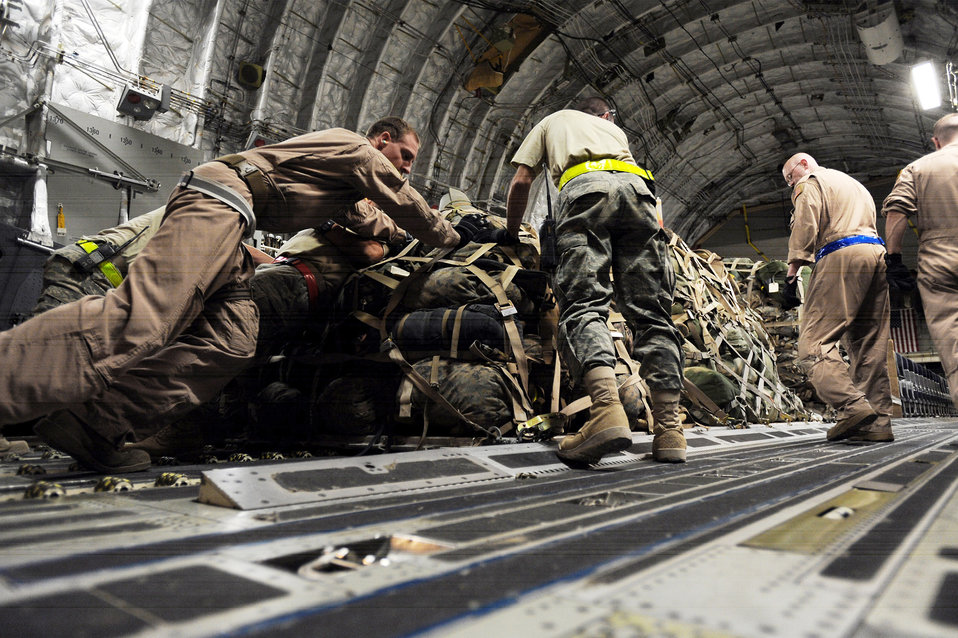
Airmen moving the mission in Afghanistan

Aerial porters assigned to the 451st Expeditionary Logistics Readiness Squadron Det. 1 and C-17 Globemaster III loadmasters assigned to the 816th Expeditionary Airlift Squadron load pallets of luggage that belong to 157 Marines boarding the aircraft April 15, 2010, at Camp Bastion, Afghanistan.